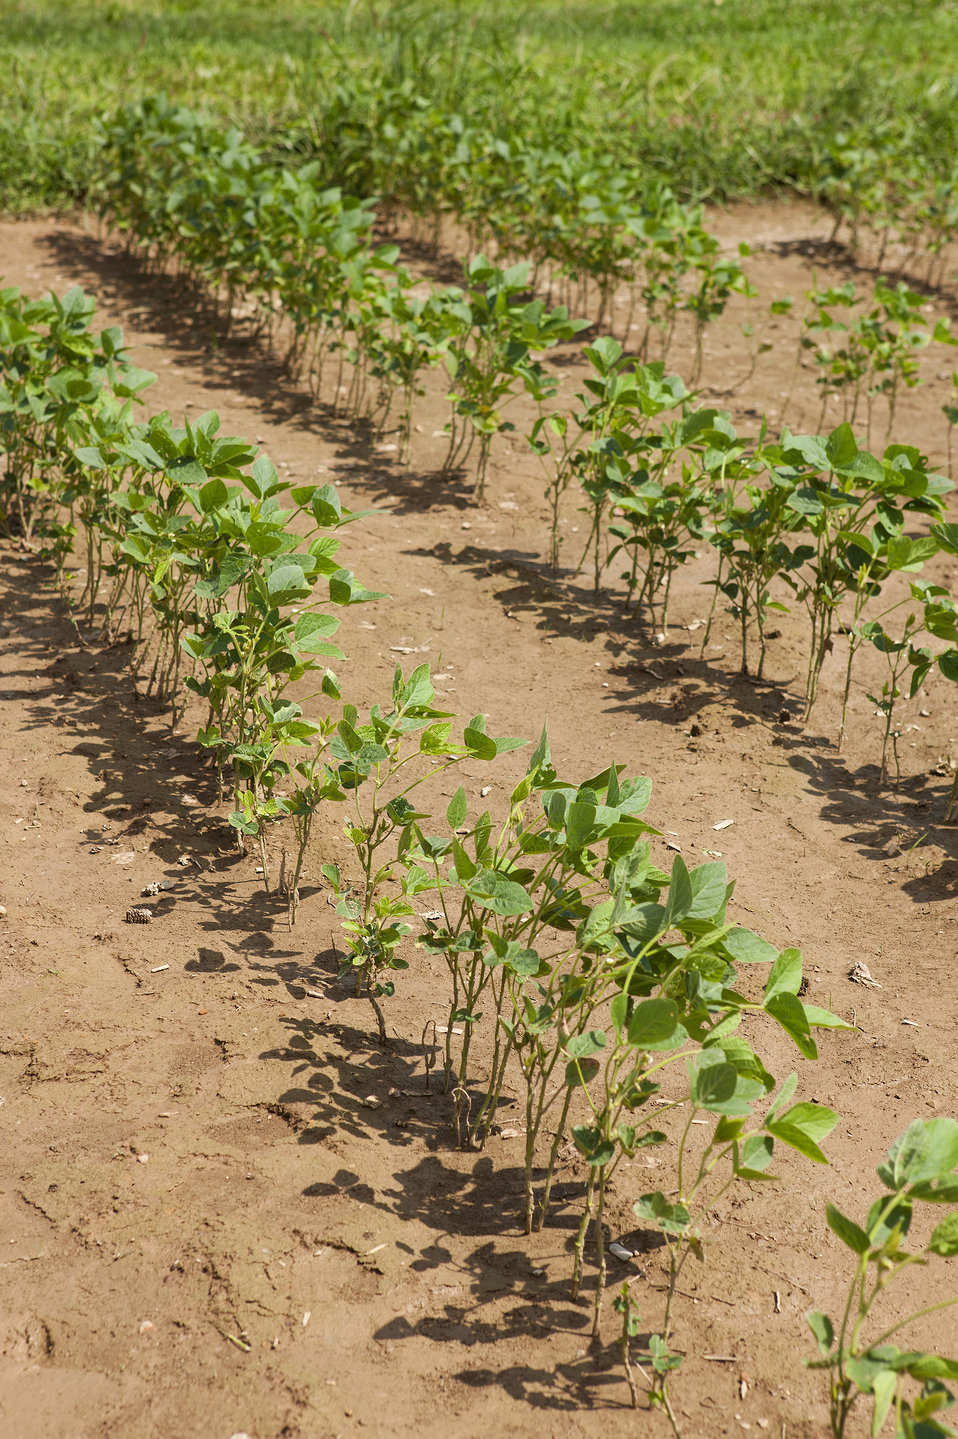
Soybean plants growing in a field after 2 weeks of flooding stress on Dec. 21, 2002.